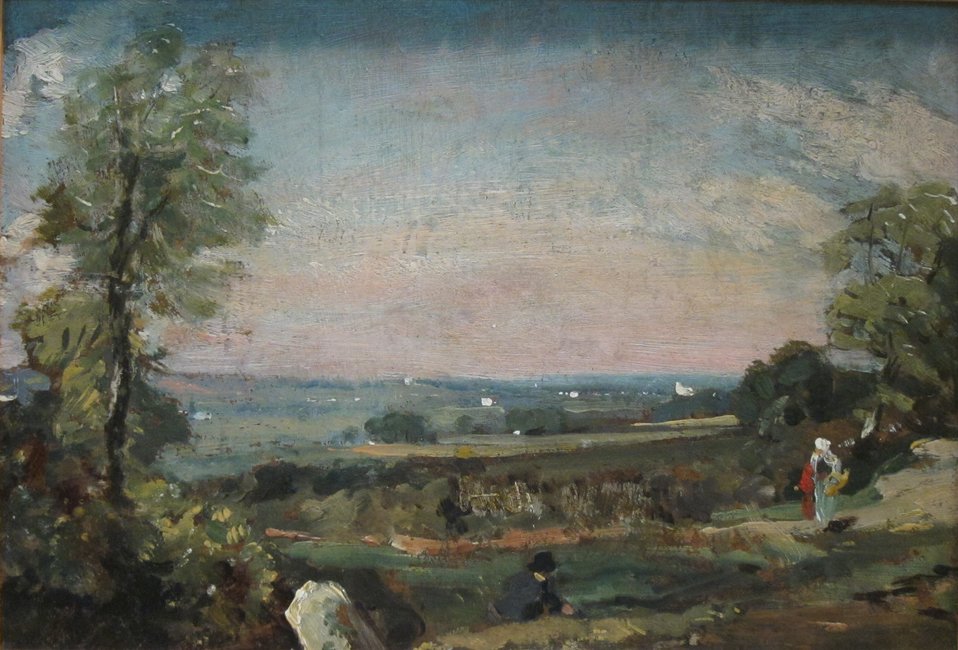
'Dedham Vale' by John Constable, Dayton